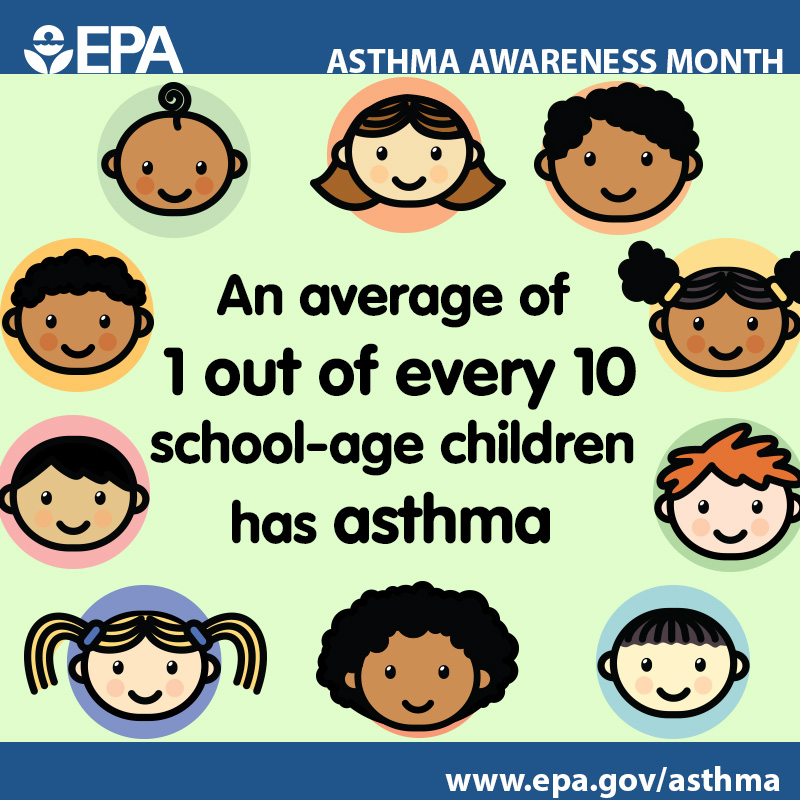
1 out of every 10 school-age children has asthma. Reduce your child’s exposure to environmental asthma triggers at home and school.